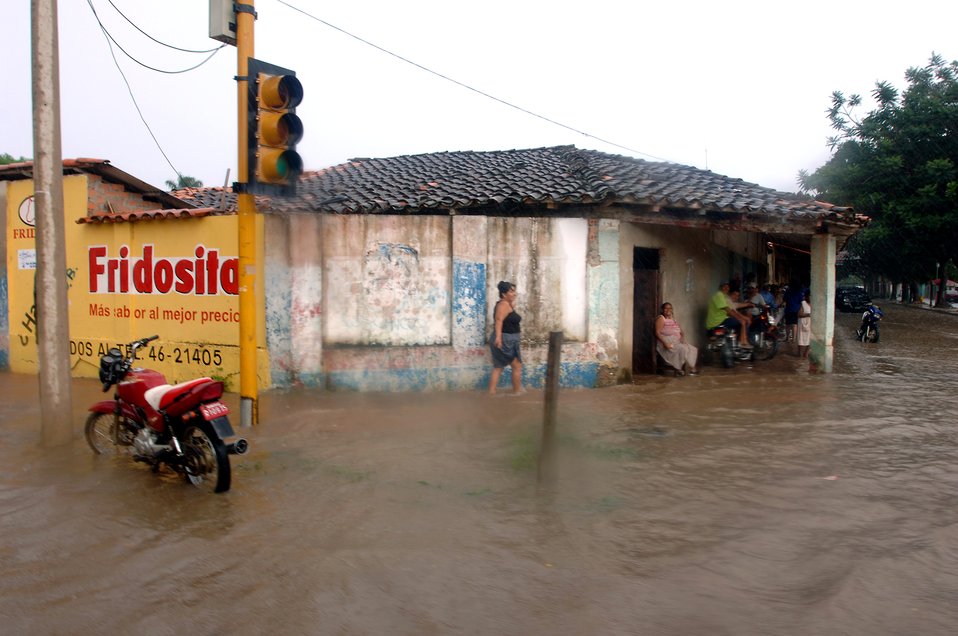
Flooded Bolivia gets humanitarian relief

Communities in Trinidad, Bolivia, are flooded by El Nino rains that hit March 5. U.S. Southern Command, in cooperation with the U.S. Agency for International Development, is delivering humanitarian supplies in response to devastating floods in Eastern Bolivia.